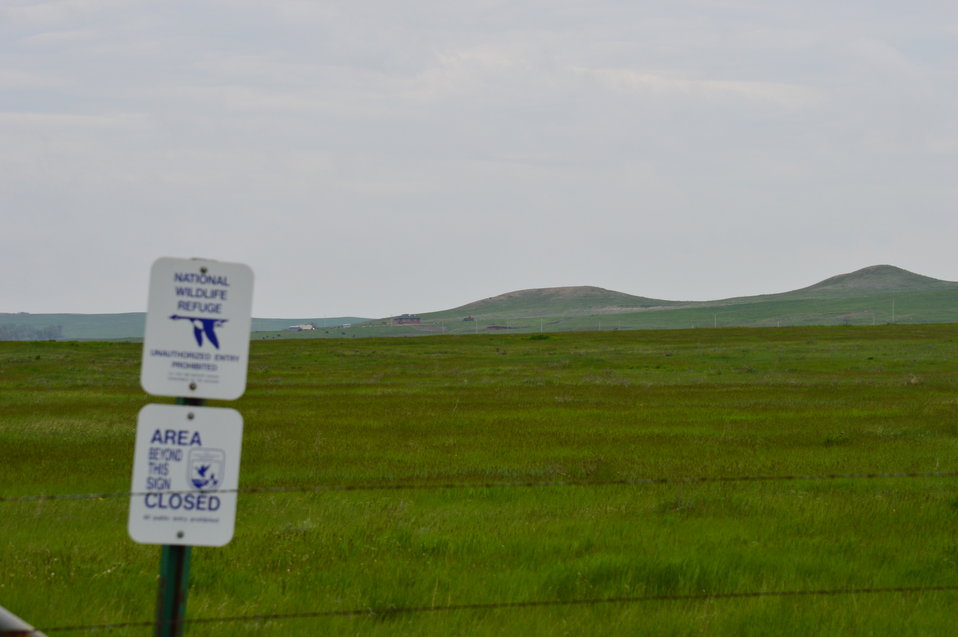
Prairie landscape with NWR sign

Scenery and wildlife at Lake Ilo National Wildlife Refuge in North Dakota